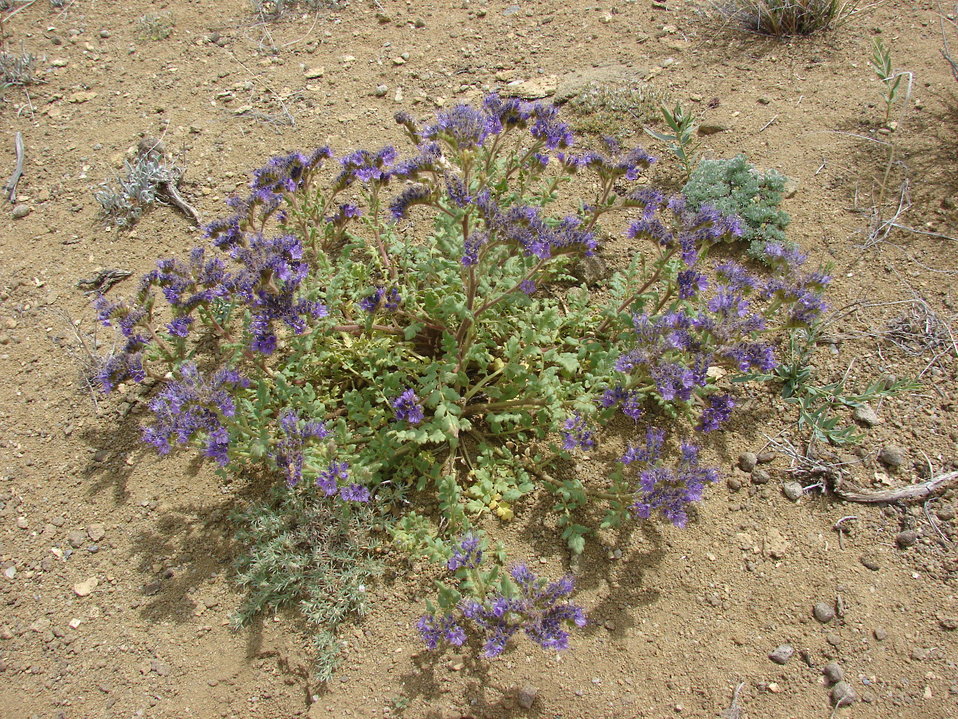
North Park phacelia in full bloom in late July.

Photo credit: USFWS
...........................................................................

BACKGROUND:
North Park phacelia (Phacelia formosula) a member of the waterleaf family (Hydrophyllaceae) is found in “North Park” of north central Colorado, near the small town of Walden. The bright purple flowers and lobed leaf margins make this species easy to spot in July and August. The plant is a biennial, surviving for one year as a rosette of leaves before flowering and dying the following year. The plant is found on barren exposures of the Coalmont Formation that are easily eroded (see the habitat pictures). Roughly 16,000 individuals are known from six separate populations and the entire species is known from an area measuring roughly 10 miles in either direction (north to south, east to west).

The species was discovered, at one location, in 1918 by the Colorado botanist, George Osterhout. Additional sites were not located until 1979. Because of the limited distribution, small population sizes and threats to the species, North Park phacelia was listed as endangered under the Endangered Species Act in 1982. Threats to the species today include: heavy livestock use, off-road vehicle traffic, oil and gas development, residential development, a lack of regulatory mechanisms, and potential effects from climate change.

Genetic and taxonomic research into the species’ relationships with close relatives in Larimer and Grand counties is underway. Further locations of these Phacelia are being sought to better understand these relationships.

Several populations of North park phacelia occur either partially or wholly on private and State lands. Conservation actions on these properties are voluntary. Funding is available to landowners wanting to conserve the species. Please contact Gina Glenne or Ellen Mayo at 970-243-2778 for further information on this species and ways that you can help with conservation and recovery.